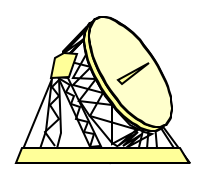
Sketch of Jodrell Bank radiotelescope by James Dignan (User:Grutness)